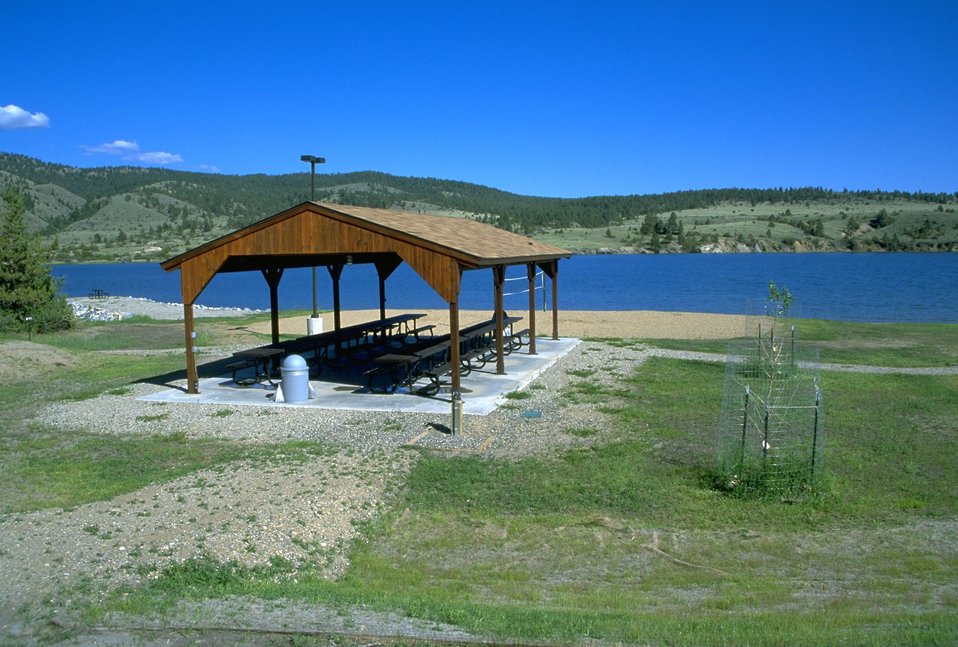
Covered picnic area by Hauser Lake